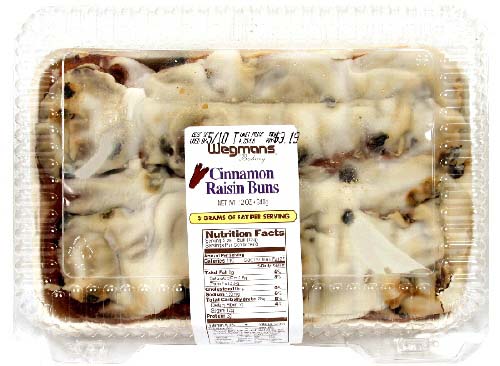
RECALLED – Cinnamon Raisin Buns

June 16, 2014 – Product Recall – Wegmans Food Markets, Inc. Issues Allergy Alert on Undeclared Egg in Wegmans Cinnamon Raisin Buns, 12 oz.